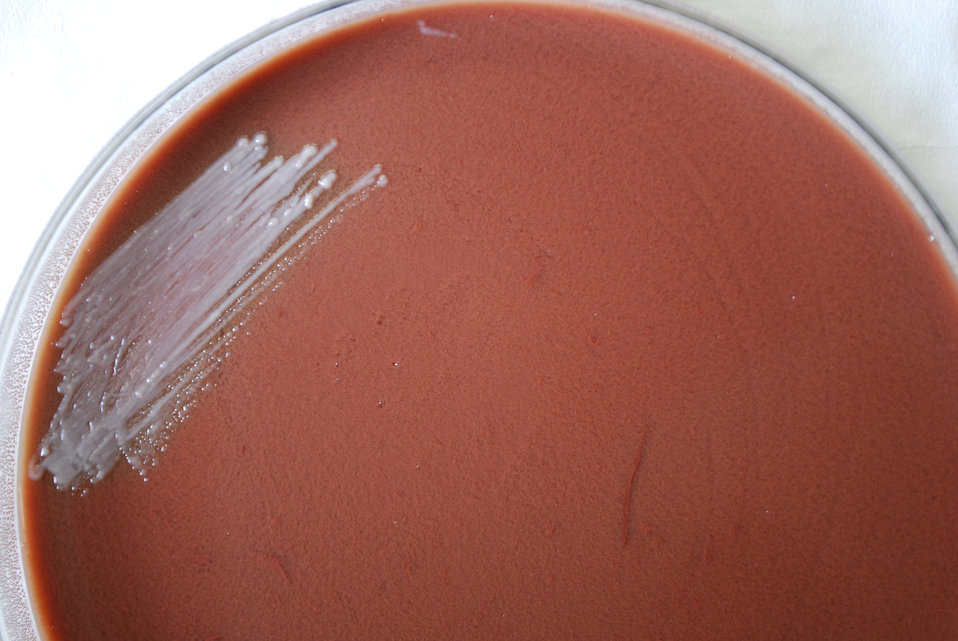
A closer view of PHIL 12221, this photograph depicts the colonial morphology displayed by Gram-negative Francisella tularensis bacteria, which is the pathogen responsible for causing the disease tularemia. These colonies were grown on a medium of cysteine heart infusion agar (CHAB), for a 24 hour time period, at a temperature of 37�C. See PHIL 12220, for a closer view of these bacterial colonies.